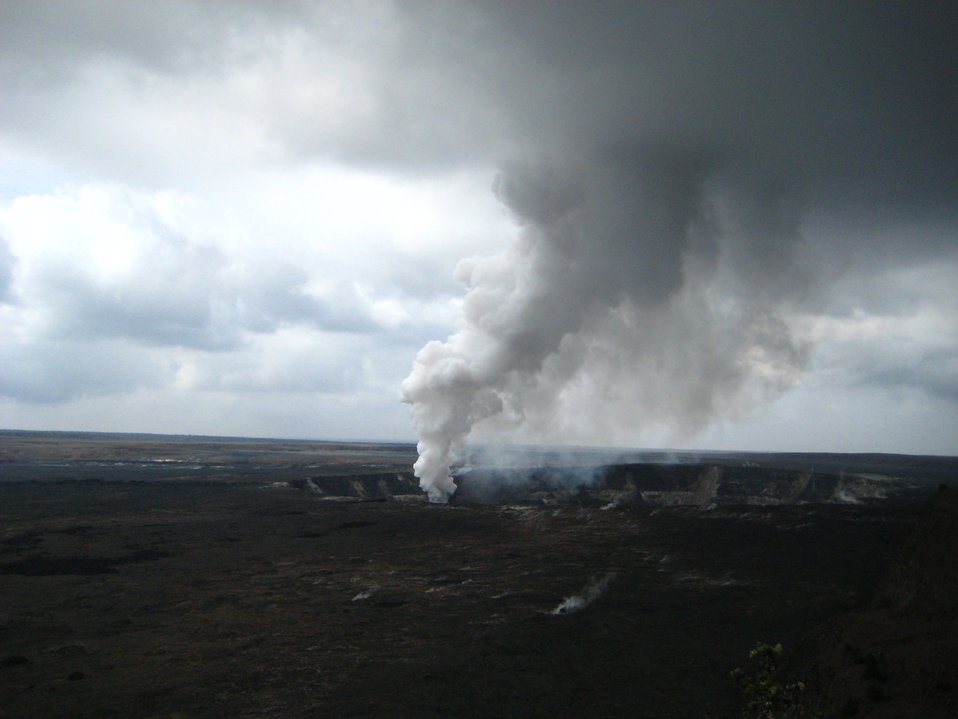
Halemaumau Crater within Kilauea Caldera at Hawaii Volcanoes National Park.